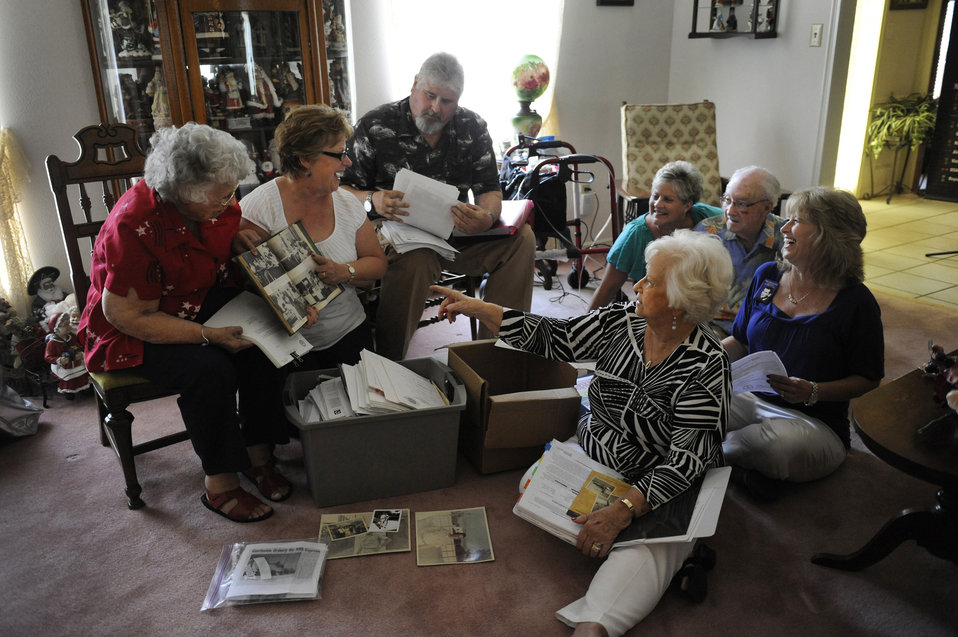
Silver Star hero

Relatives laugh as Debra Morris, second from left, a niece of the late Master Sgt. James Calfee, shows a photo of her uncle from his high school yearbook in Houston, Texas, Aug. 22, 2012. Calfee, who was posthumously awarded the Silver Star Medal, was killed in action in Laos in 1968.